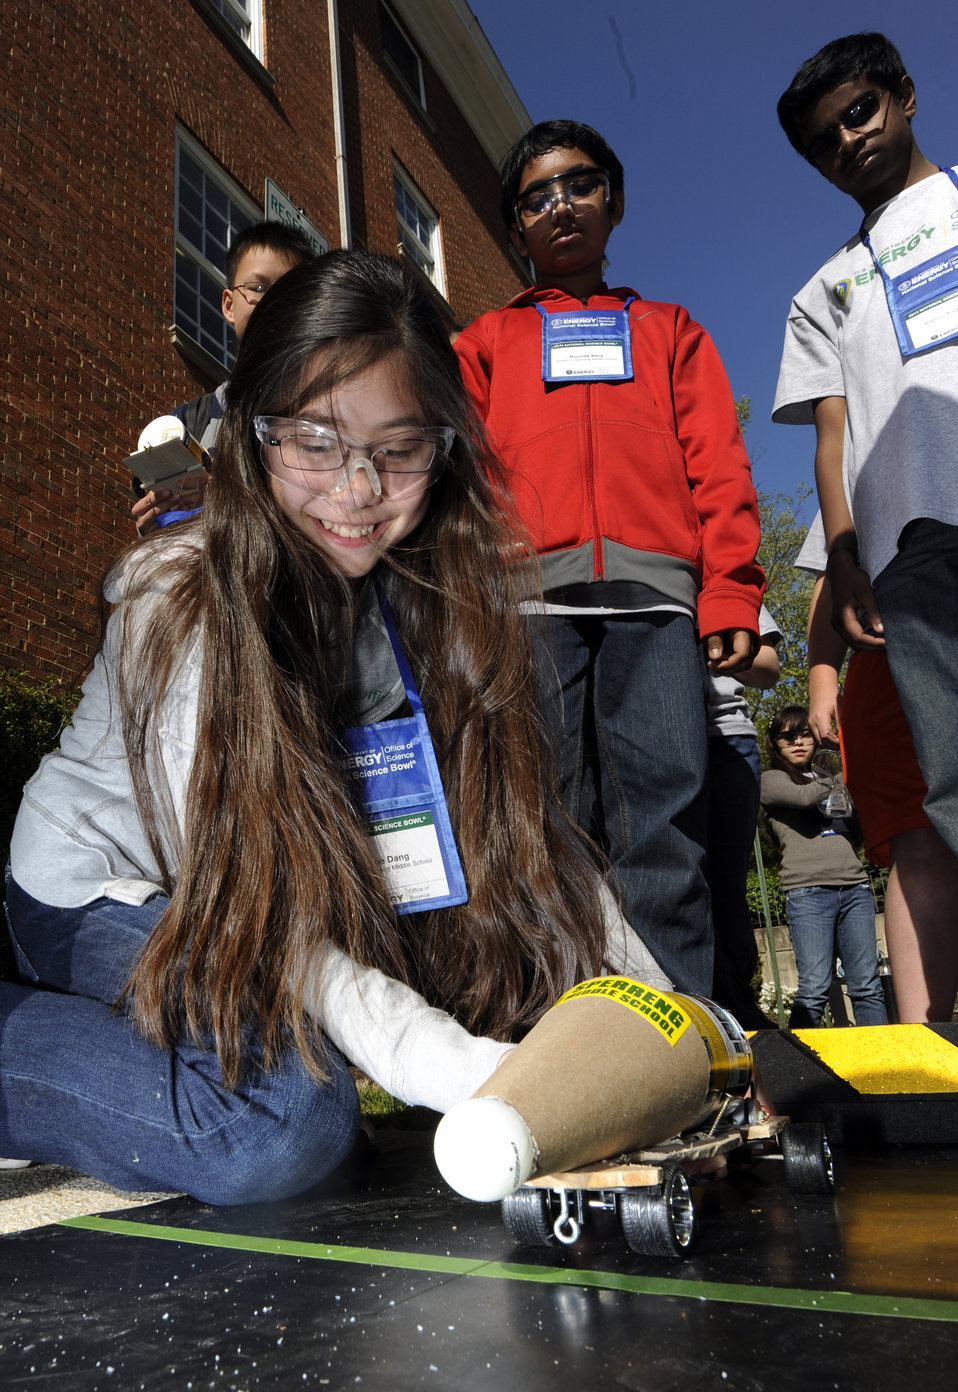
Students from Robert H. Sperreng Middle School in St. Louis, MO runs their teams battery operated vehicle during the Electric Car Competition at the 2013 National Science Bowl in Washington, DC.

The Department of Energy created the National Science Bowl in 1991 to encourage students to excel in mathematics and science and to pursue careers in these fields.